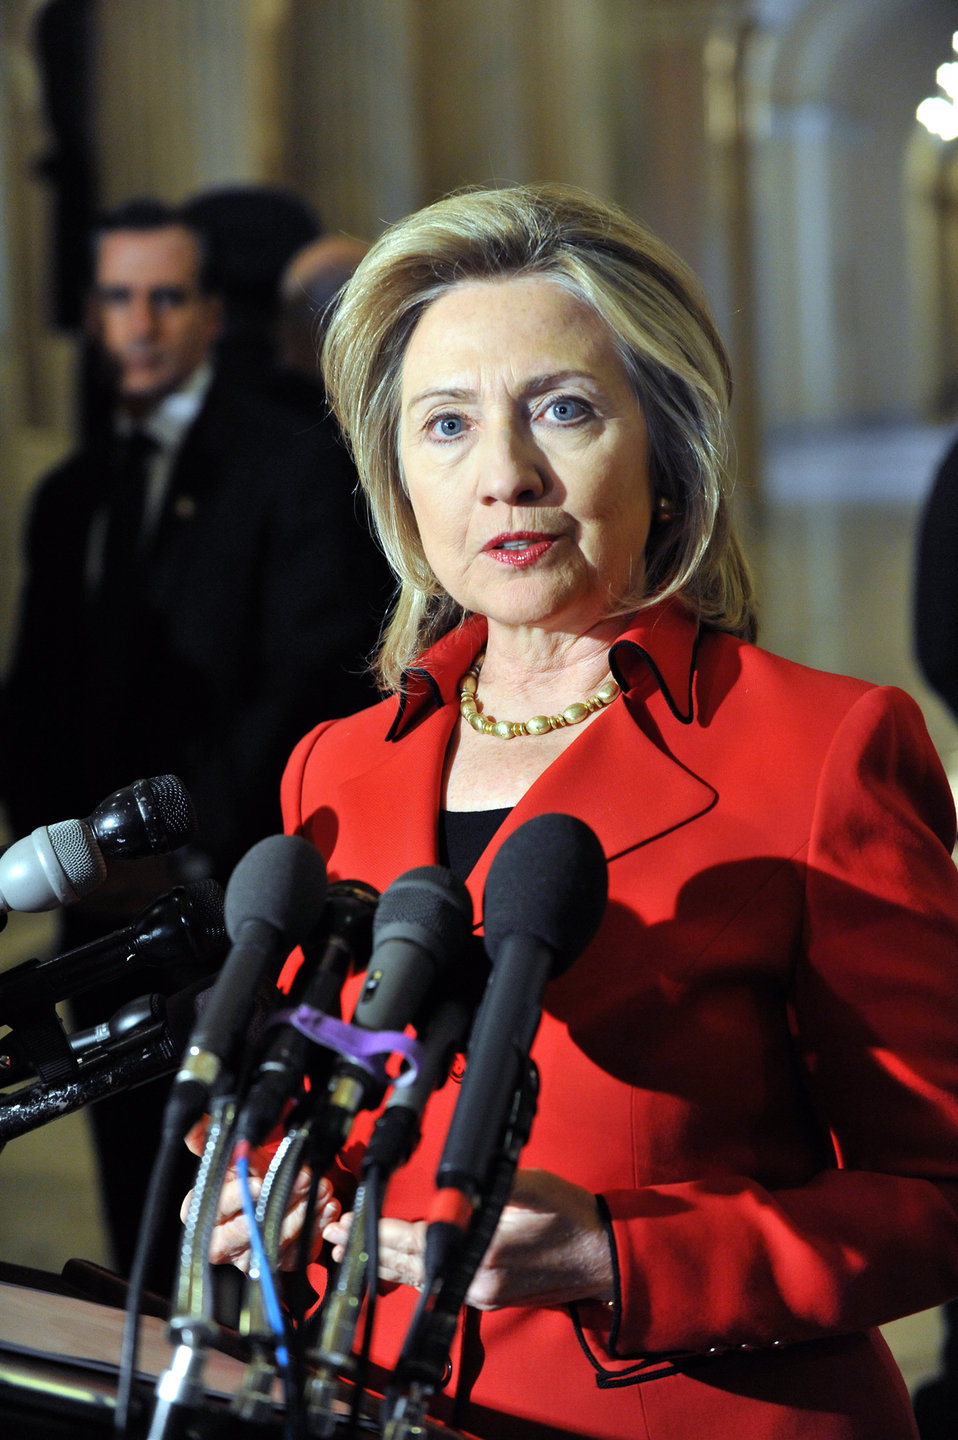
Secretary Clinton Briefs the Press on Capitol Hill

U.S. Secretary of State Hillary Rodham Clinton briefs the press after her meeting with House Speaker John Boehner on Capitol Hill in Washington, D.C., on February 14, 2011.